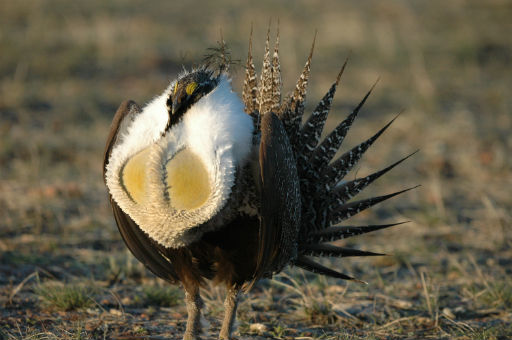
Greater sage-grouse are a candidate species for Endangered Species Act protection. The males display on dancing grounds in the spring and use the air sacks to create a booming or popping sound that can be heard a mile away.